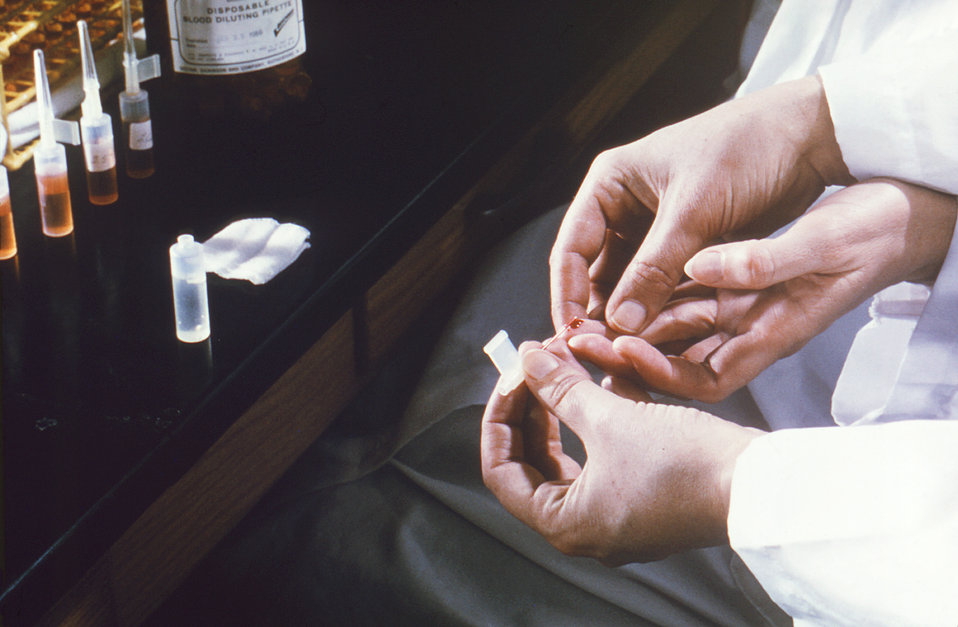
Using a Unopette�, this historic 1965 photograph depicted a laboratory technician performing a finger-prick in order to extract a donor's capillary blood specimen, which was to be tested for the presence of cyanmethemoglobin.